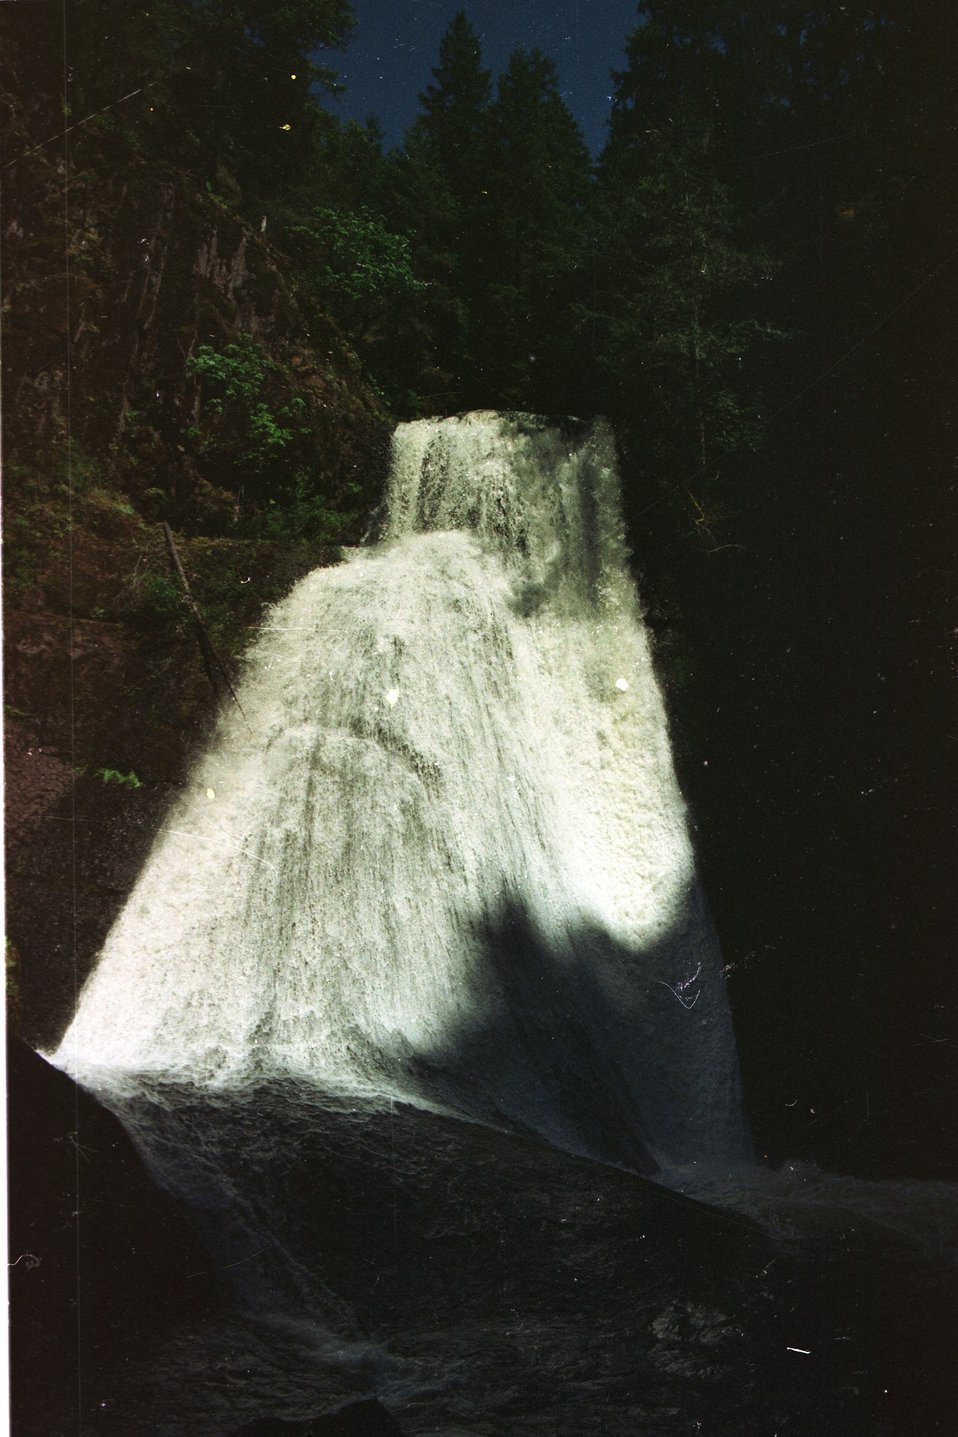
Upper Wolf Creek Falls (Full Level Flow).